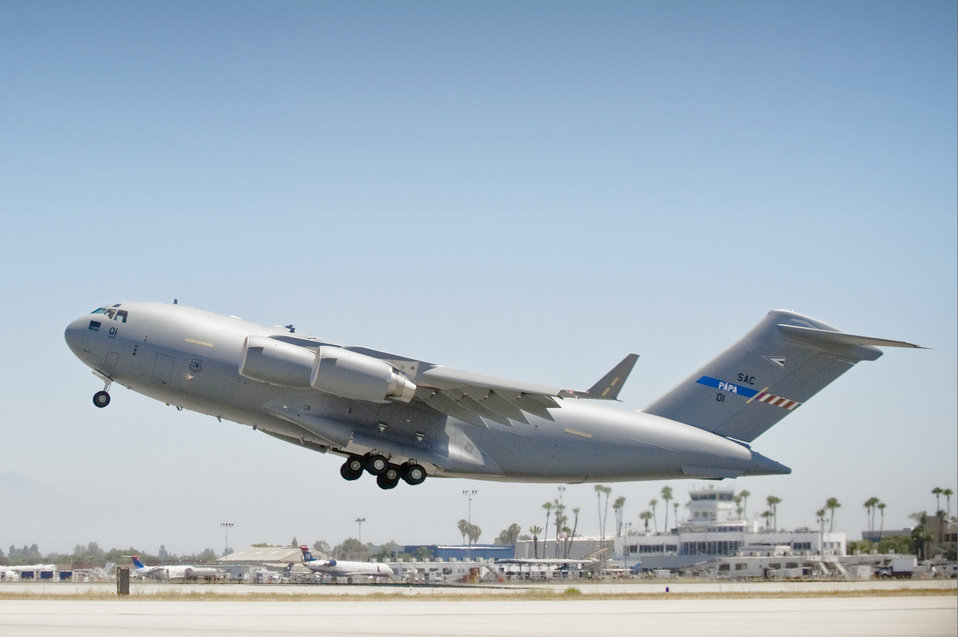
12-nation Heavy Airlift Wing takes flight with first C-17

SAC 01 takes off beginning its 5,300-nautical-mile maiden flight July 14 from Long Beach, Calif., to Papa Air Base, Hungary. The aircraft is the first of three C-17 Globemaster IIIs to be acquired by the 12-nation Strategic Airlift Capability Program. The Hungarian air base is home to the SAC Program's multinational, operational-level unit, the Heavy Airlift Wing, which will officially be activated July 27.